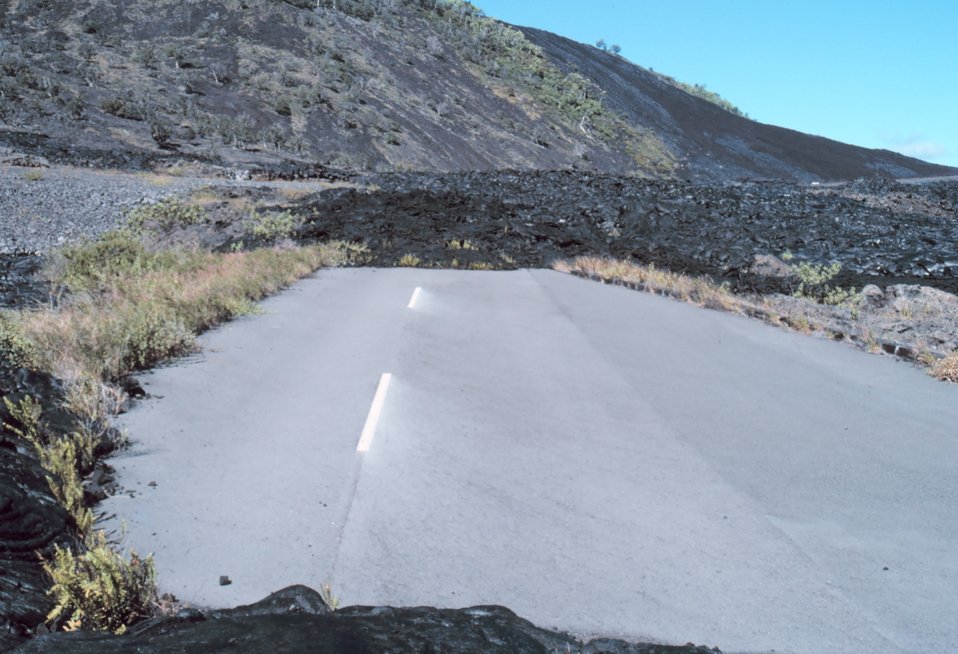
The end of the road caused by a lava flow across the pavement